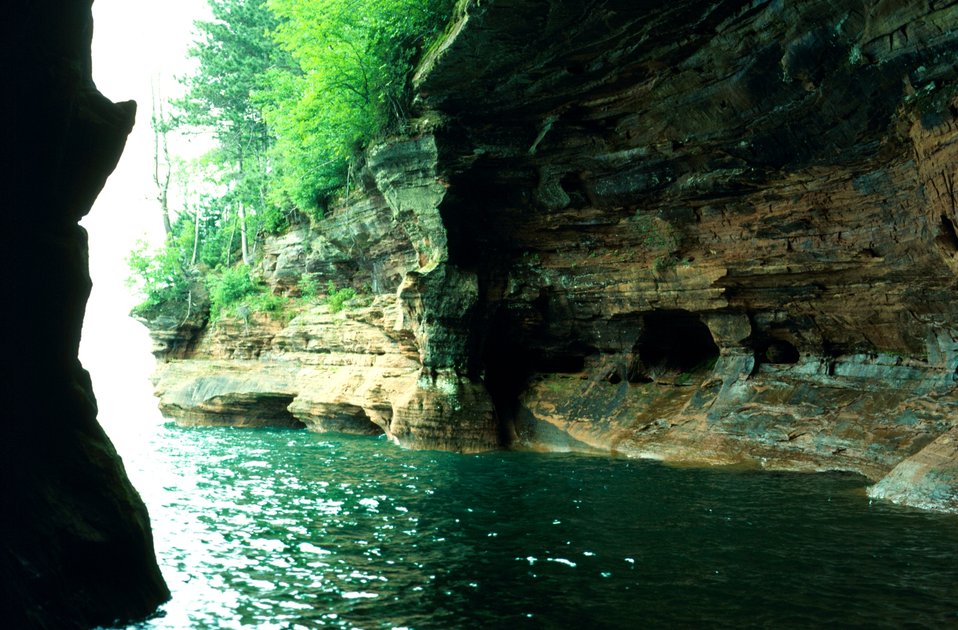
Cave explored by NOAA Ship PEIRCE Boston whaler.